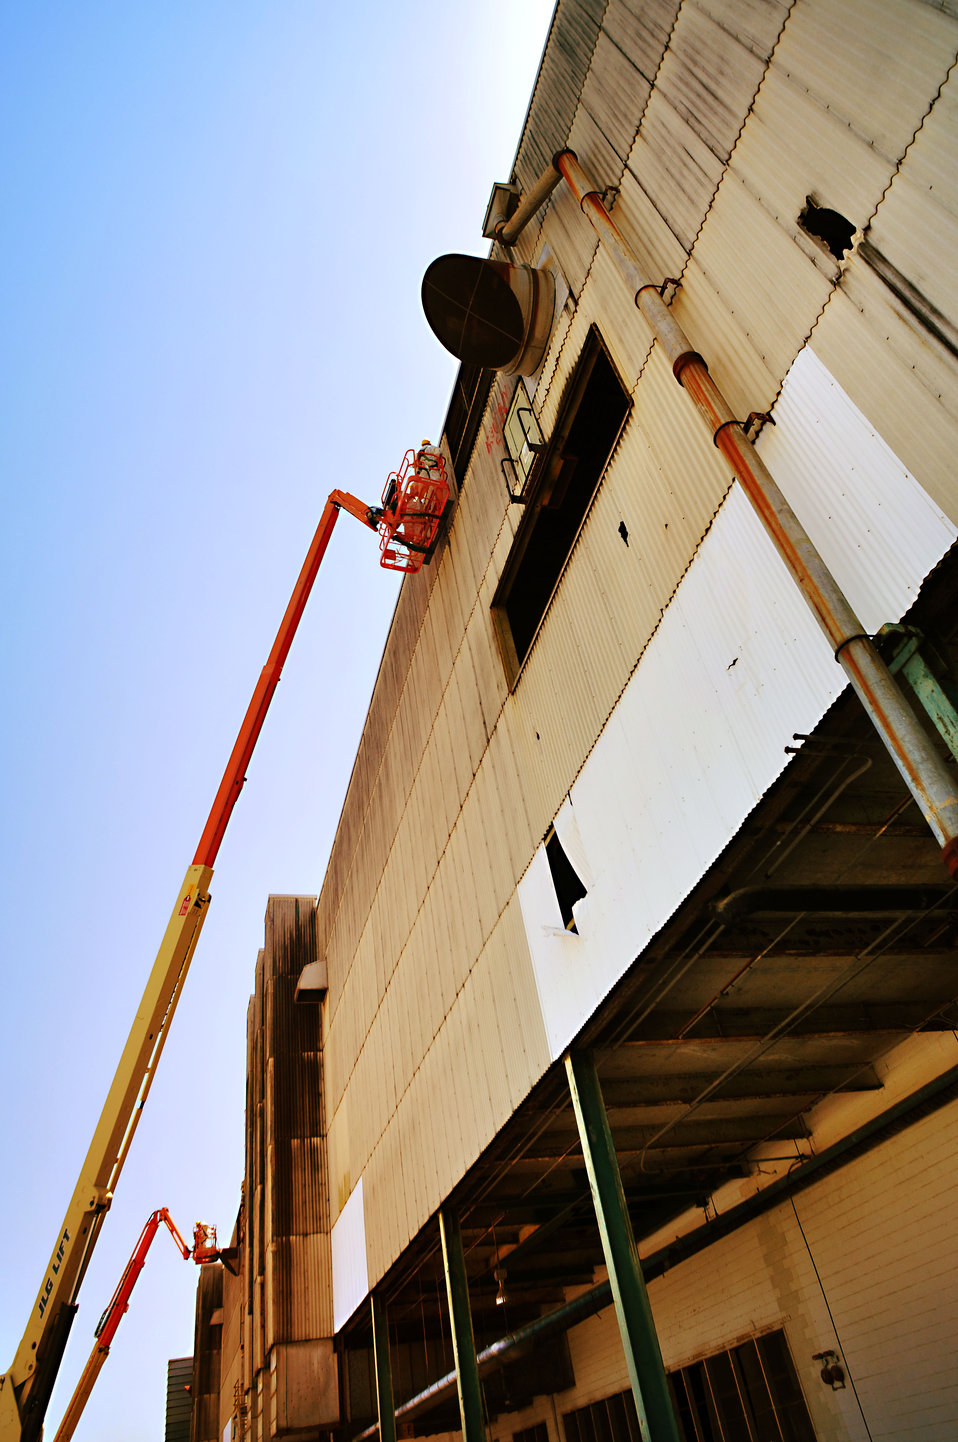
Transite Panels Removal from K-31 Building 2014 Oak Ridge

14-057 DOE photo Lynn Freeny 5-6-2014 ETTP K-31 Oak Ridge Tennessee